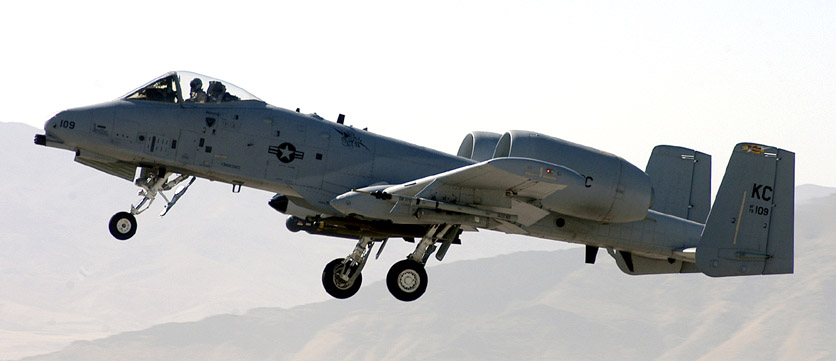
July 28 airpower summary: A-10s strike enemy targets

An A-10 Thunderbolt II takes off from Bagram Airfield, Afghanistan, on a mission for Operation Enduring Freedom.